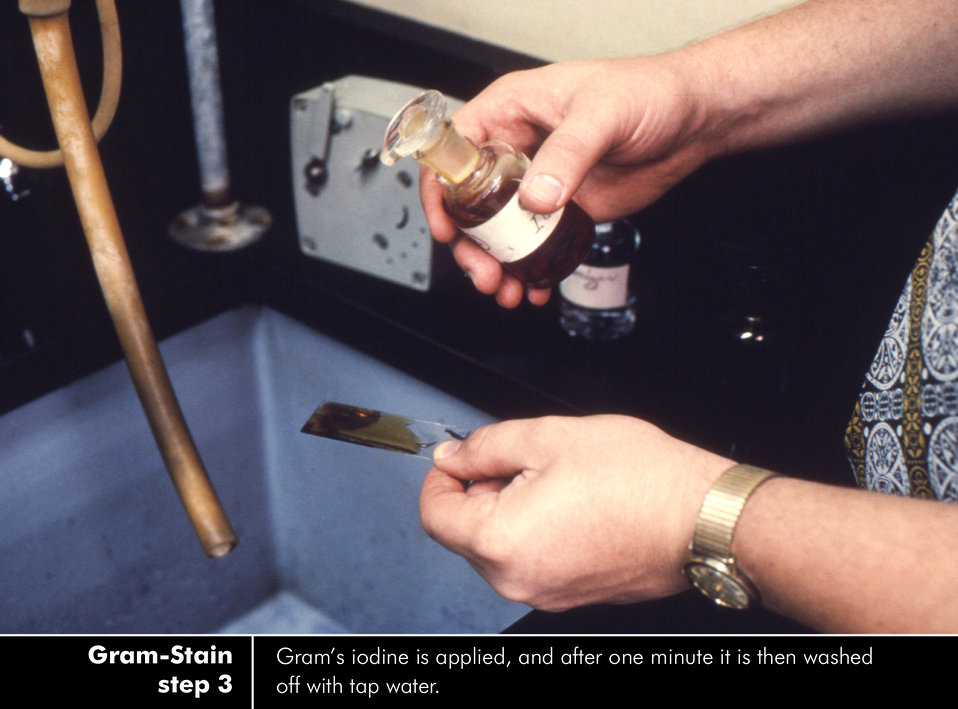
Gram-stain procedure - Step 3 of 7. See PHIL ID#'s: 3433, 3426, 3427, 3435, 3437, 3436, 3434 for the complete set.